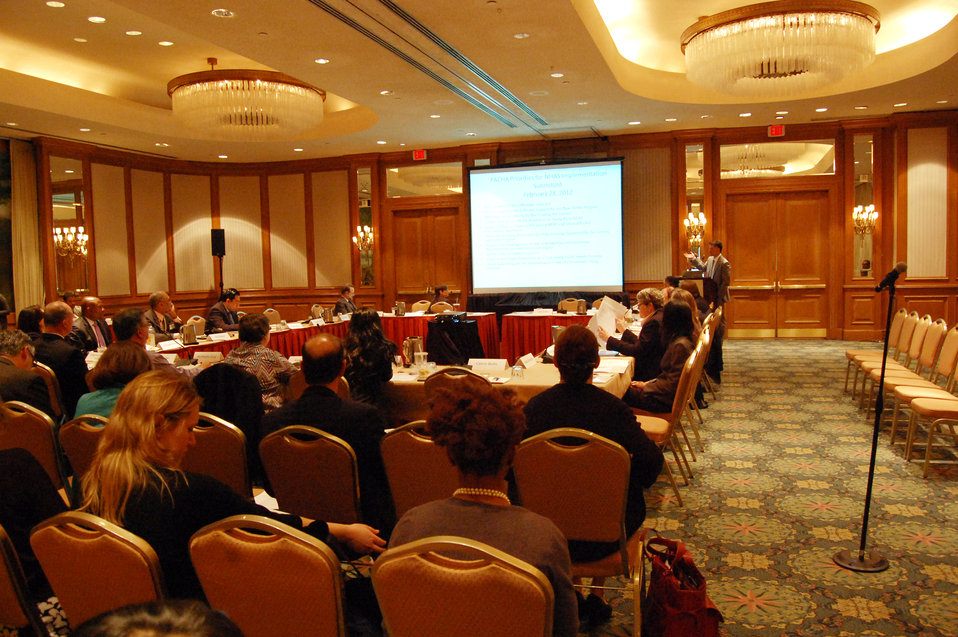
PACHA conf042